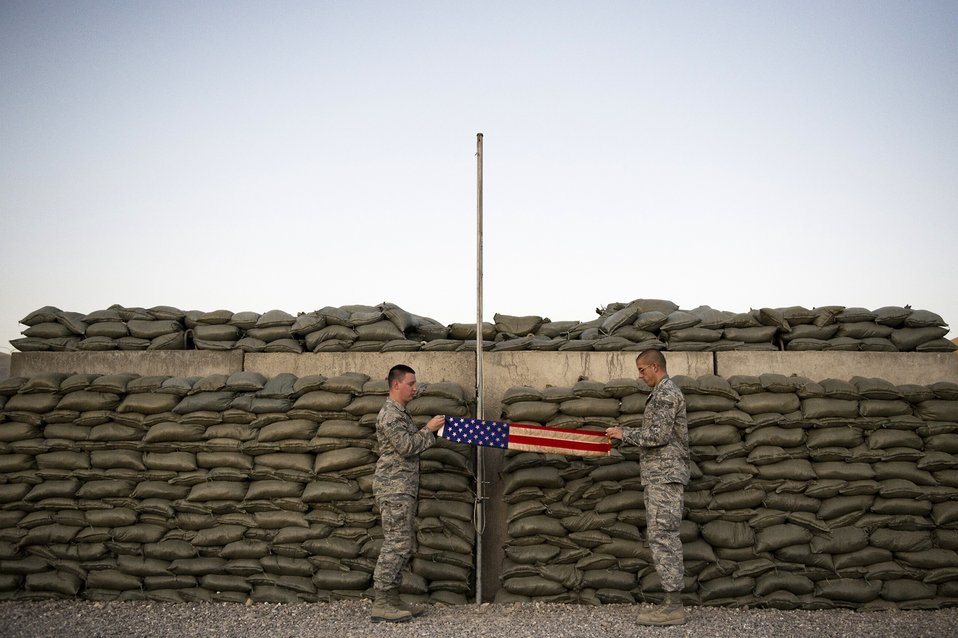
Retreat

Airman 1st Class Arron Fairfax (left) and Senior Airman Ryan Adkins fold the flag during the daily retreat ceremony at Camp Etchberger, Afghanistan. Airmen at the camp perform reveille and retreat ceremonies everyday during their deployment. Both Airmen are part of Detachment 1, 73rd Expeditionary Air Control Squadron.